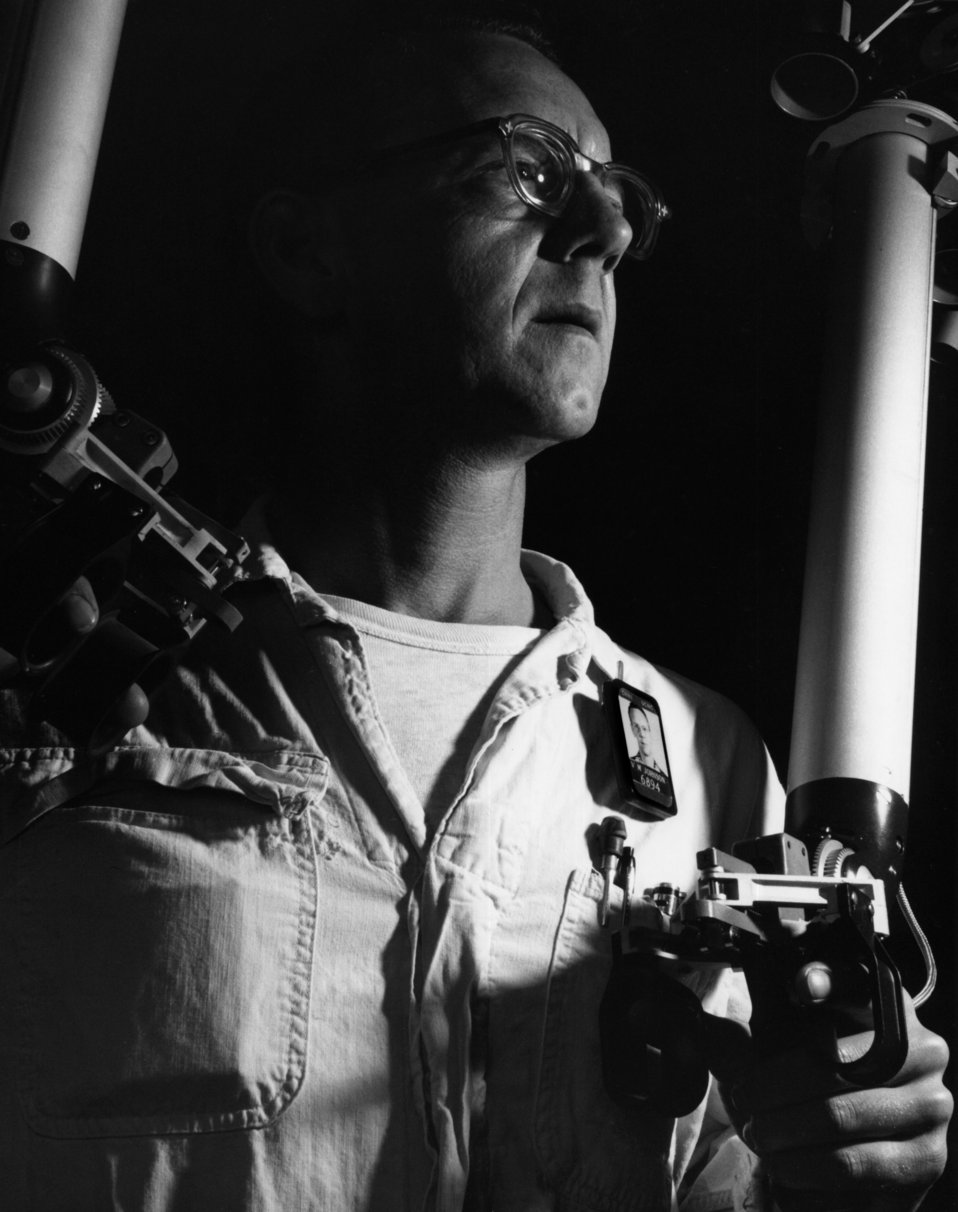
Virgil Johnson Using Mechanical Hands in Hot Cell ORNL

59-62-d DOE photo Ed Westcott 2-12-1959 Oak Ridge Tennessee